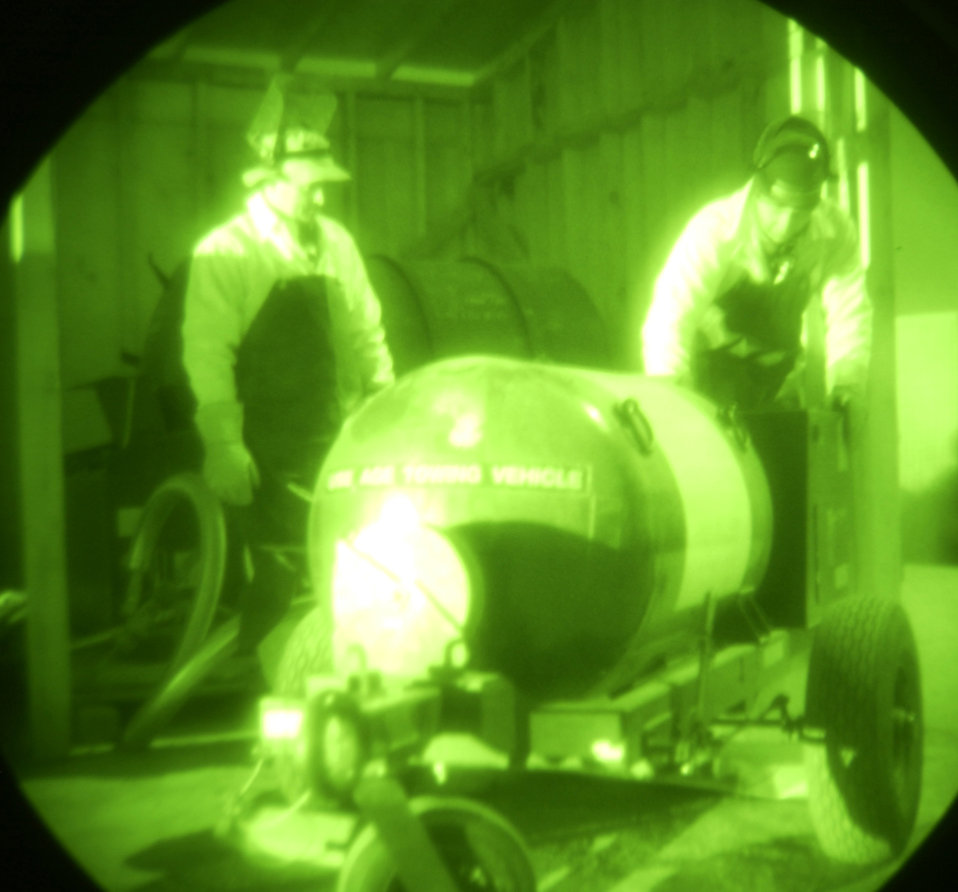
No fuel, no fight

BAGRAM AIR BASE, Afghanistan -- Staff Sgts. William Paholak (left) and Christopher Lund prepare to refill a liquid-oxygen cart here. Nighttime brings a near-total dark to the flightline, which necessitates wearing might-vision goggles to do their jobs. Both airmen are fuels specialists assigned to the 455th Expeditionary Operations Group.